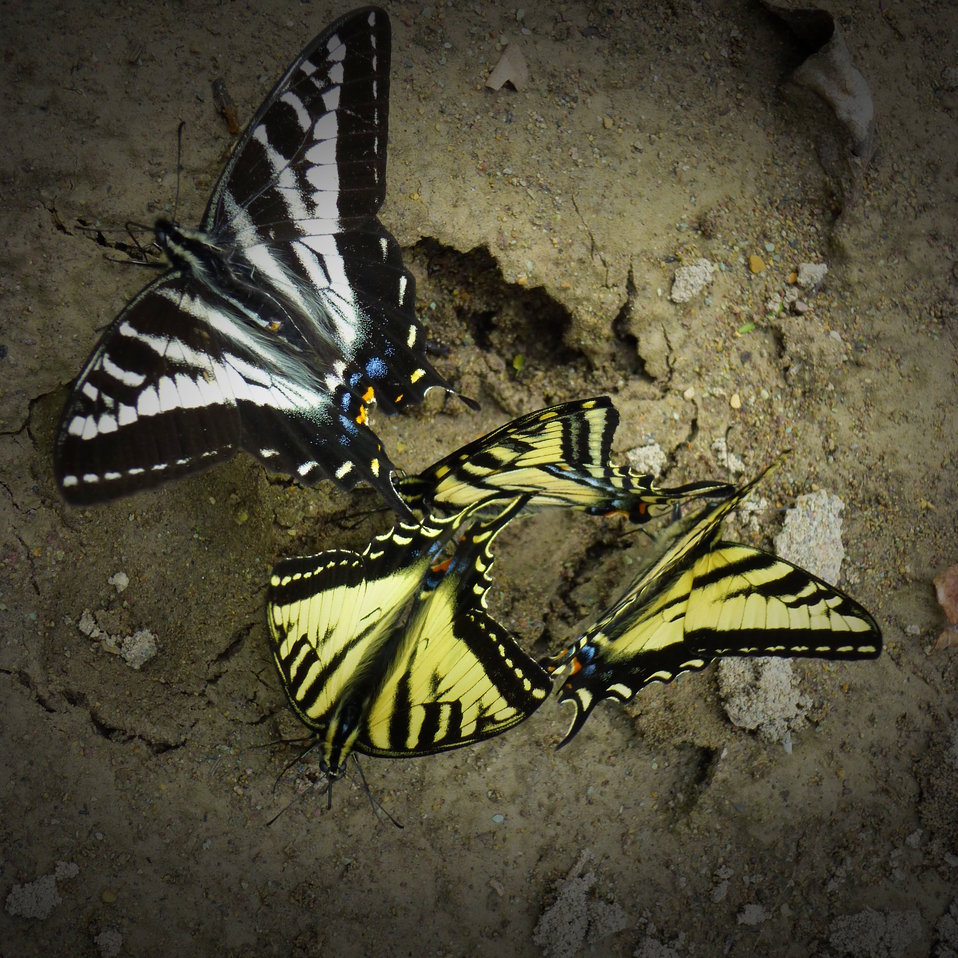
Butterflies in the Classroom

There are many different types of Swallowtail butterflies in Montana. As you walk around the Creston National Fish Hatchery you may see more than one variety of these beautiful creatures.

Location: Creston National Fish Hatchery

Credit: Evie Bradley / USFWS

Photo Contest Entry #107